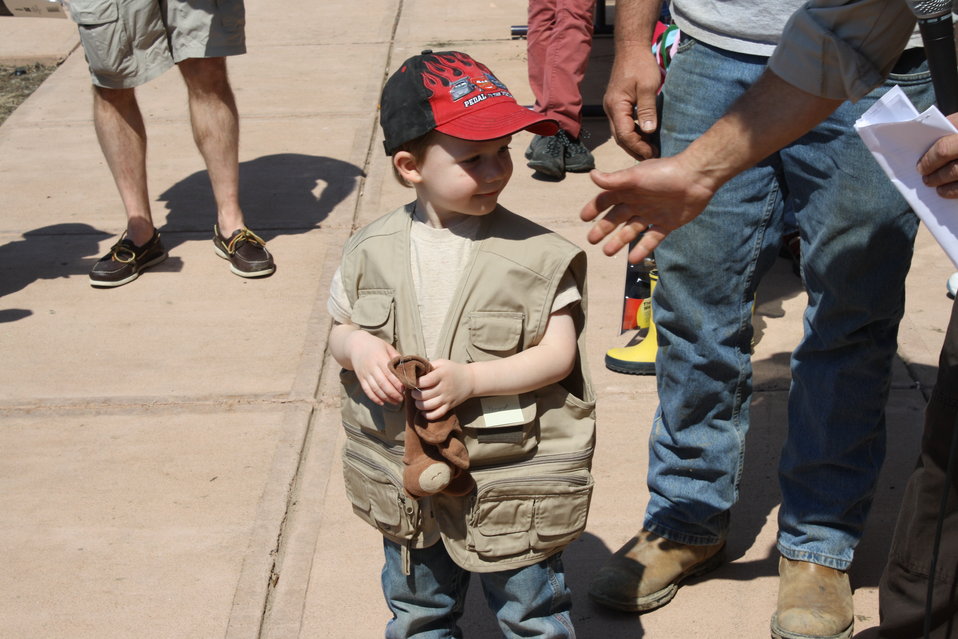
3rd prize youngest!

A winner at the USFWS fishing derby in Hadley, MA on May 7th.